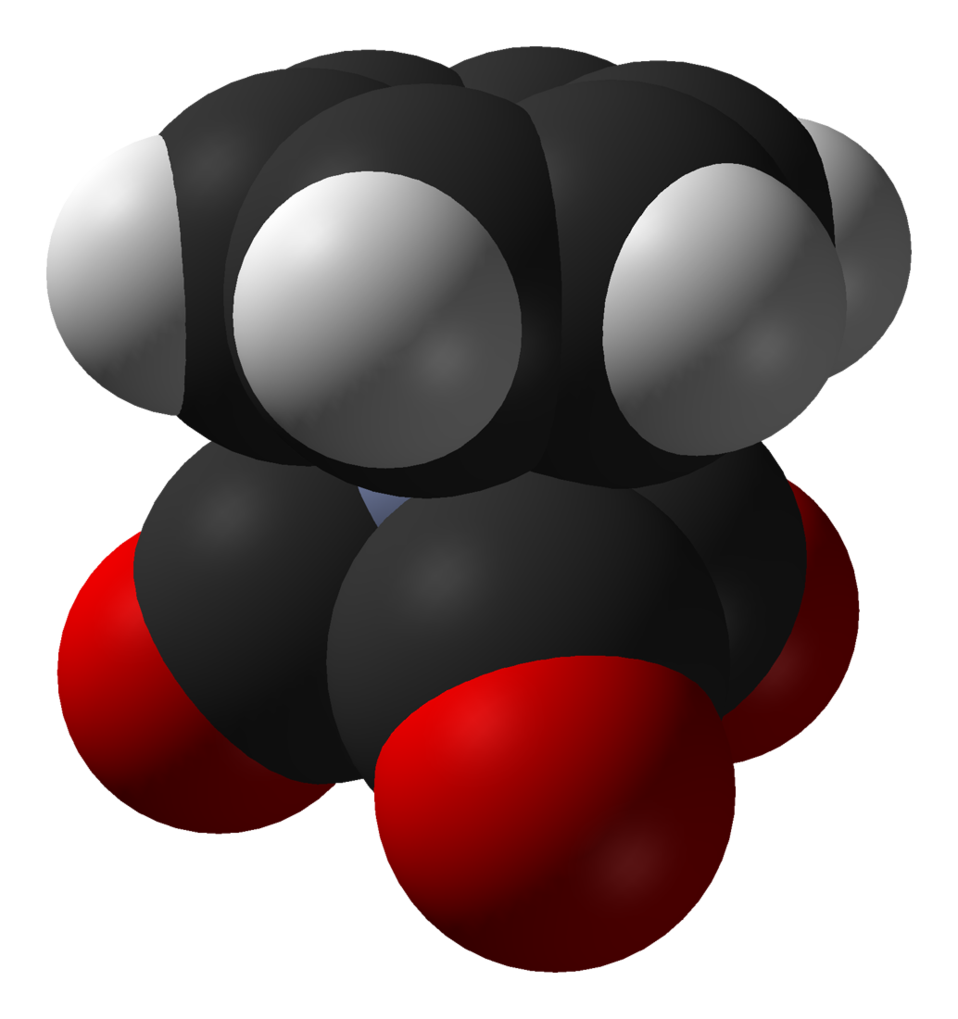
Space-filling model of the (benzene)chromium tricarbonyl molecule, [(C6H6)Cr(CO)3]. X-ray diffraction data from J. Am. Chem. Soc. (1987) 109, 587–589. Model constructed in CrystalMaker 8.1. Image generated in Accelrys DS Visualizer.